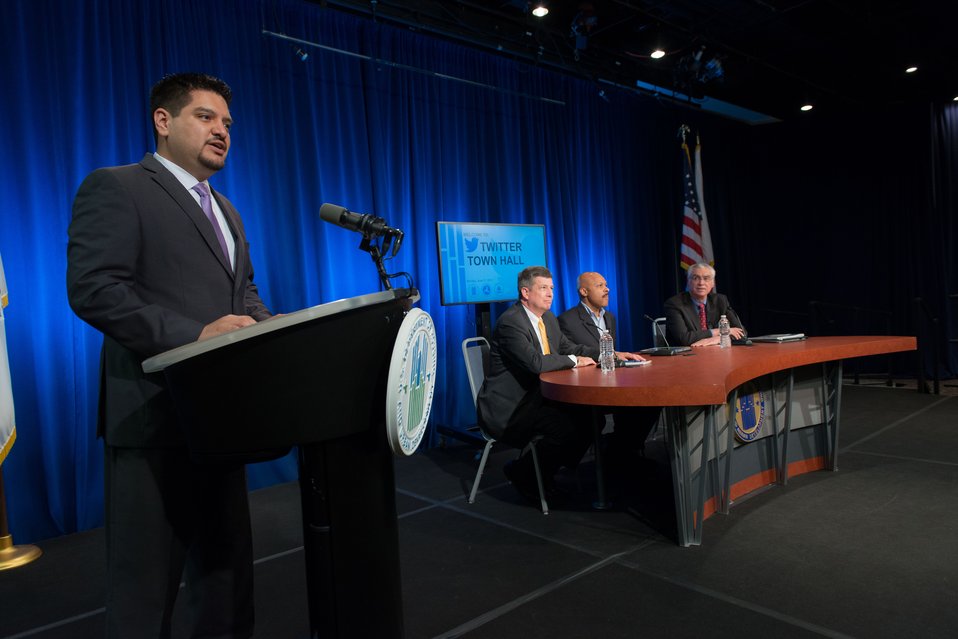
EPA, HUD, and DOT Twitter Town Hall Begins

Twitter town hall moderator, George Gonzalez (HUD) introduces the panelists.
USEPA Photo by Eric Vance. Public domain image